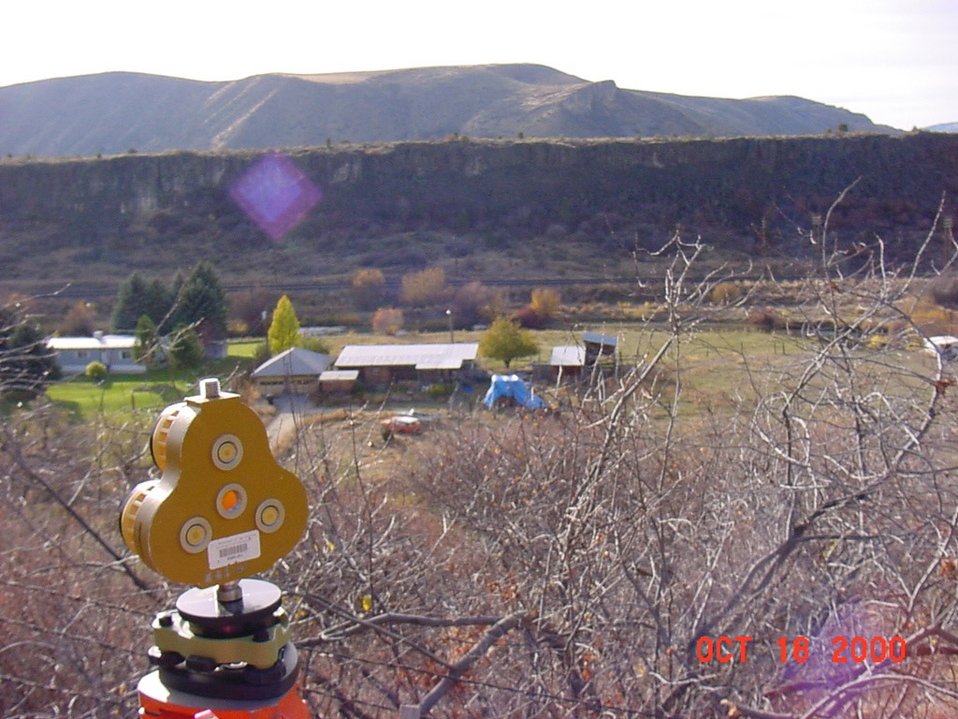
Cadastral Surveys Idaho Bureau of Land Management